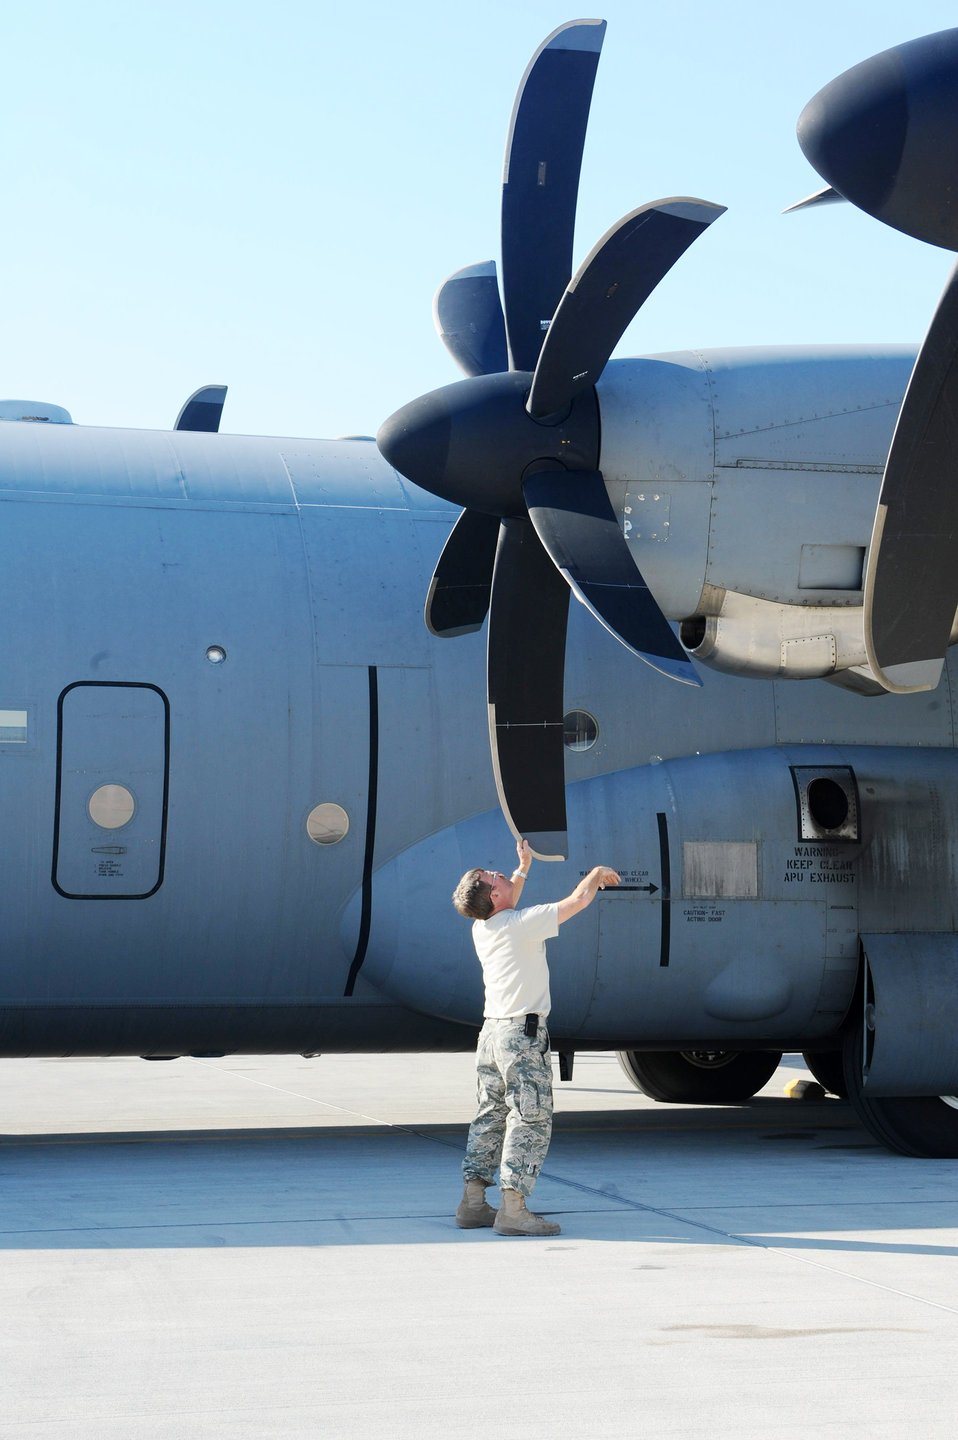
Let's take a look

Chief Master Sgt. Michael Watson, the 746th Expeditionary Airlift Squadron operations superintendant, inspects the propellers of a C-130J Super Hercules as part of the pre-flight checklist at an air base in Southwest Asia Jan. 9, 2010.